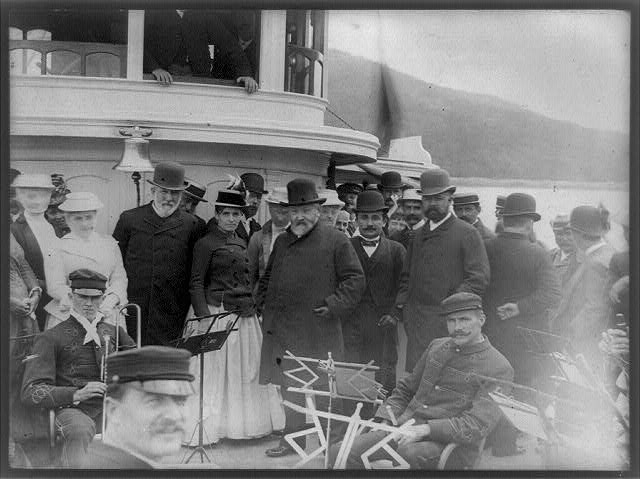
Secretary Blaine aboard the Sappho

Secretary of State James G. Blaine along with President Benjamin Harrison, and Henry Cabot Lodge among others, on the forward deck of the Frenchman's Bay steamer Sappho.